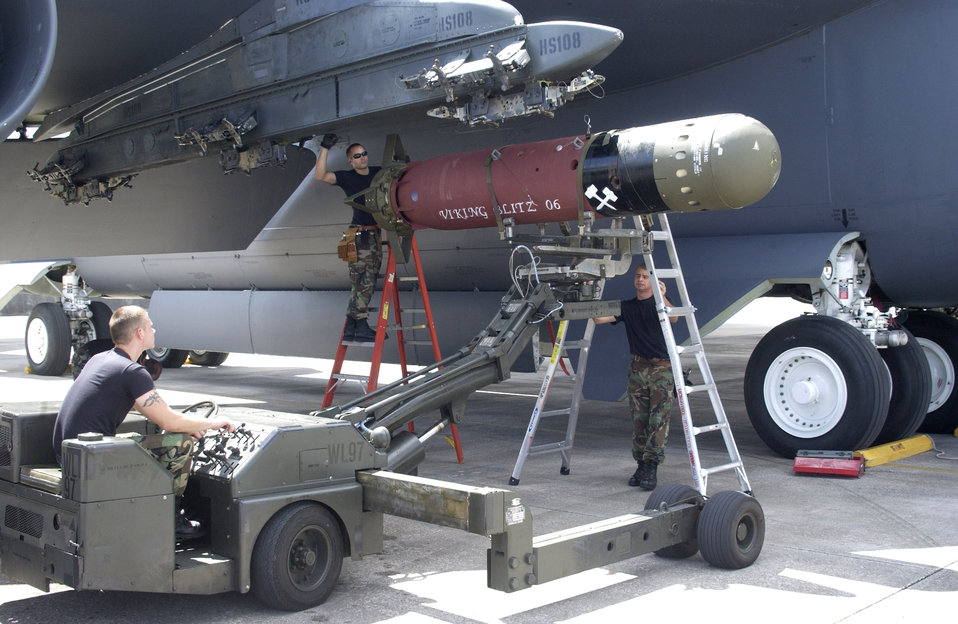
Air Force, Navy wrap up joint mine exercise

Staff Sgt. Joshua Sweet (right) guides Airman 1st Class Wayne Robinson as he positions an Mk 56 mine under the wing of a B-52 Stratofortress. Staff Sgt. Jason Smith (on ladder) and Sergeant Sweet will secure the weapon once it is in position. The three are weapons loaders with the 36th Expeditionary Aircraft Maintenance Squadron at Andersen Air Force Base, Guam.